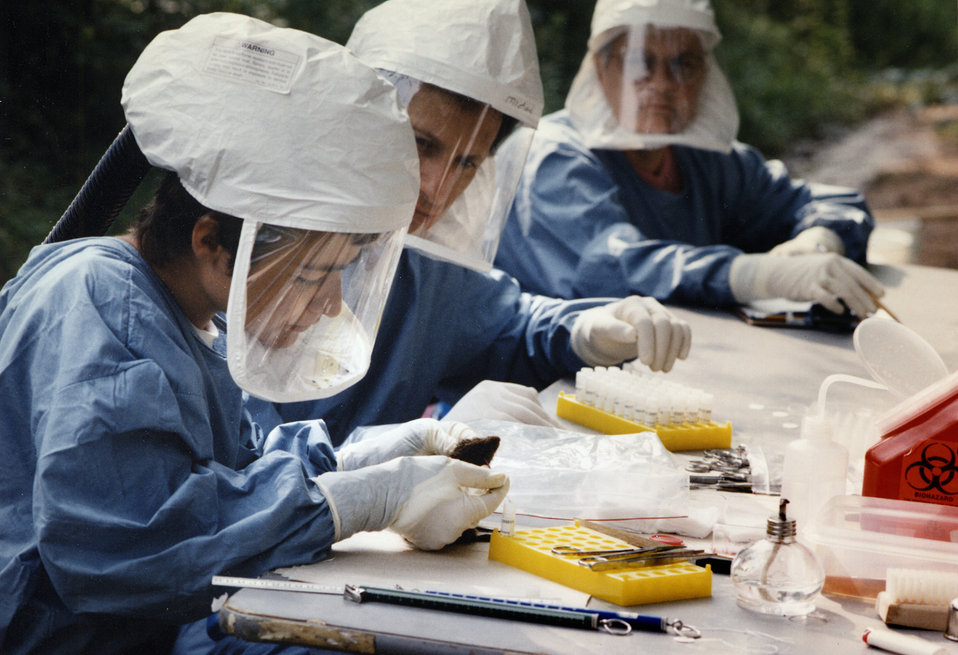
This photograph showed three CDC health officials inspecting specimens suspected of being connected with a Hantavirus outbreak.